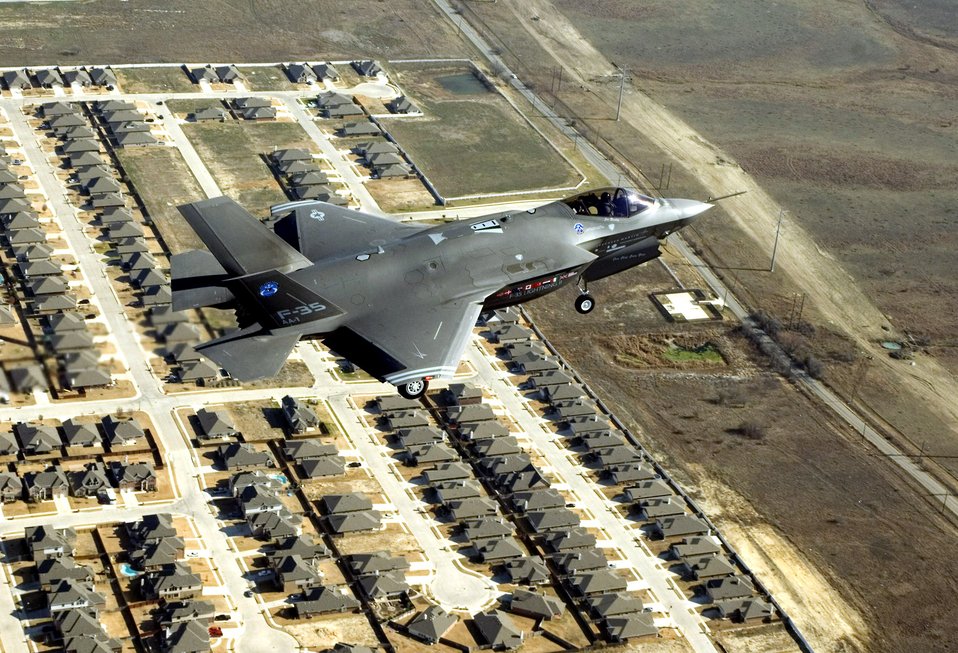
Lightning in sky for first time

The F-35 Lightning II Joint Strike Fighter makes its initial flight Dec. 15 over Fort Worth, Texas.